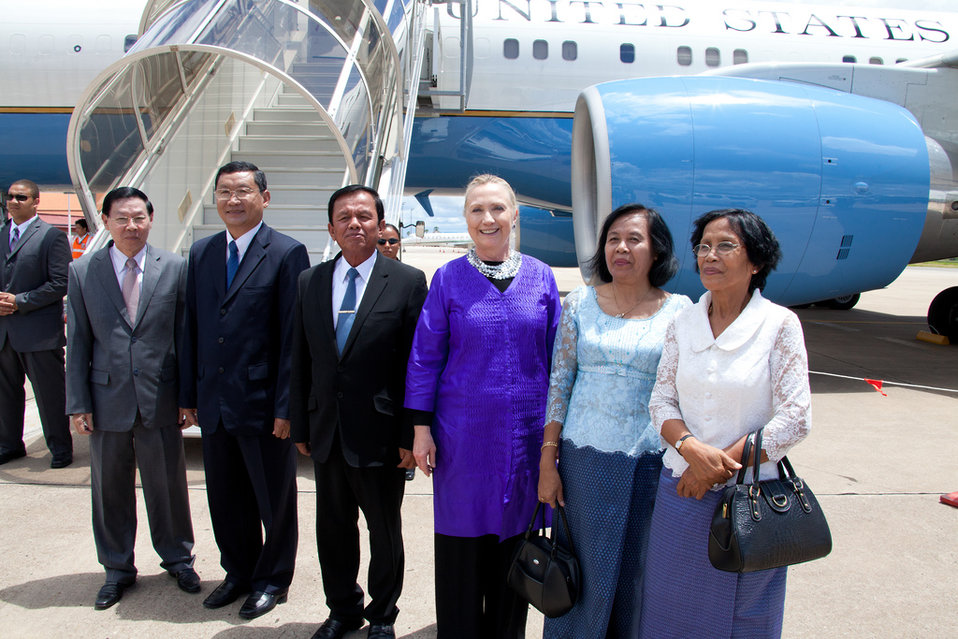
Secretary Clinton Arrives in Siem Reap

U.S. Secretary of State Hillary Rodham Clinton is greeted by local officials upon her arrival to Siem Reap, Cambodia, on July 13, 2012.